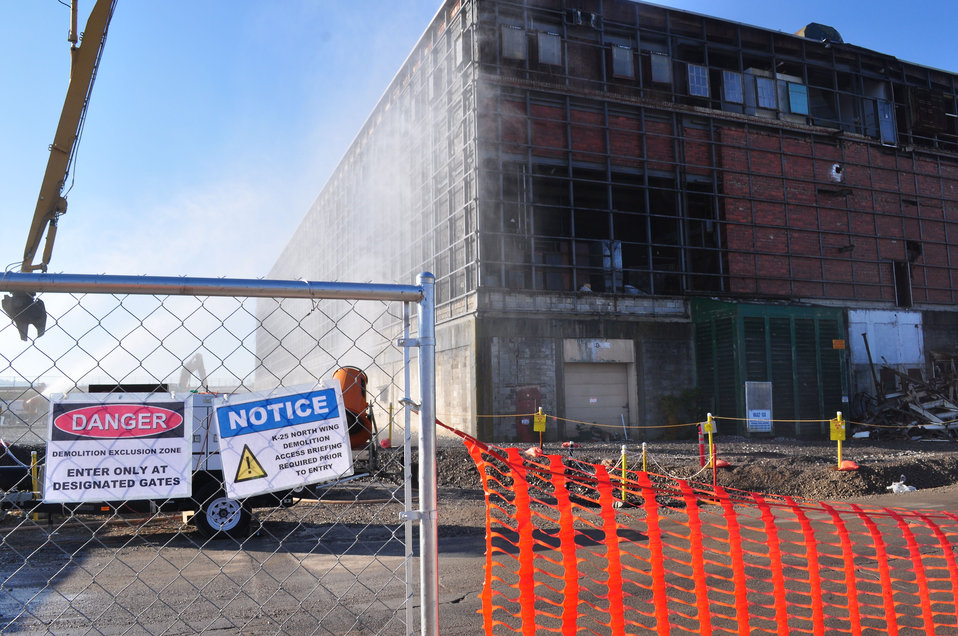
K-25 Beginning of North Tower Demolition

12-160-04 DOE photo Lynn Freeny 10-24-2012 Oak Ridge Tennessee